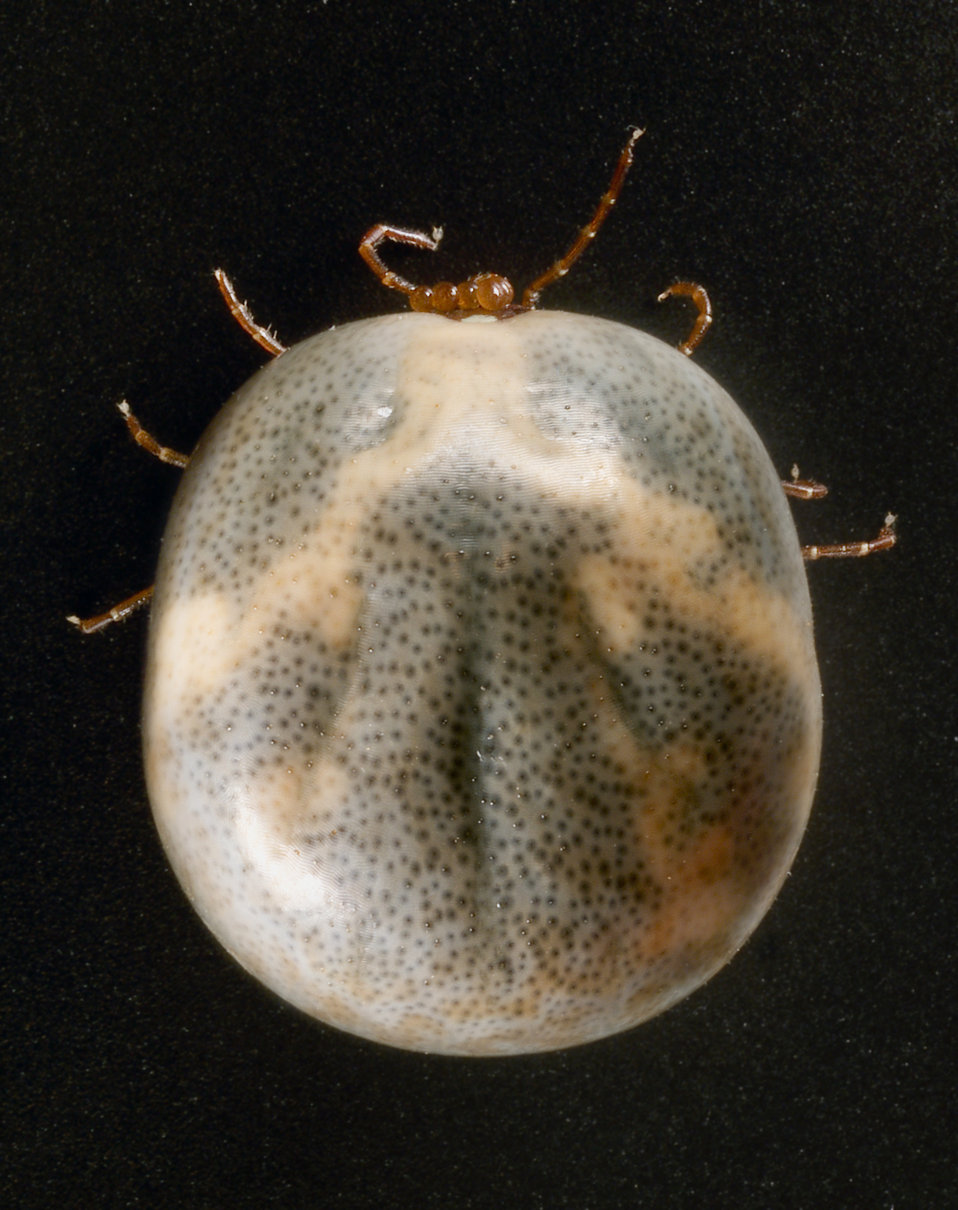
This photograph depicts a dorsal view of an engorged female "lone star tick", Amblyomma americanum. Note a number of round, amber-colored eggs showing from beneath the head region, which were just laid by this female. An engorged female of this species can lay approximately 2000-2500 eggs. To view additional images related to this tick specie, see PHIL 4407, 8676, 8677, 8678, and 8680 through 8685.